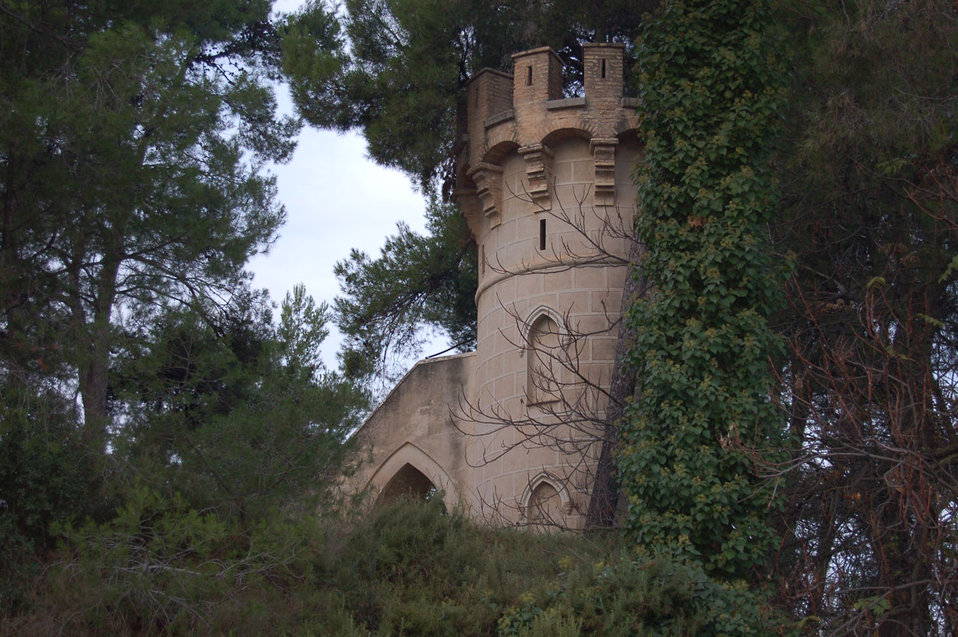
Fortress tower

Santa barbara house tower hermitage ontinyent.